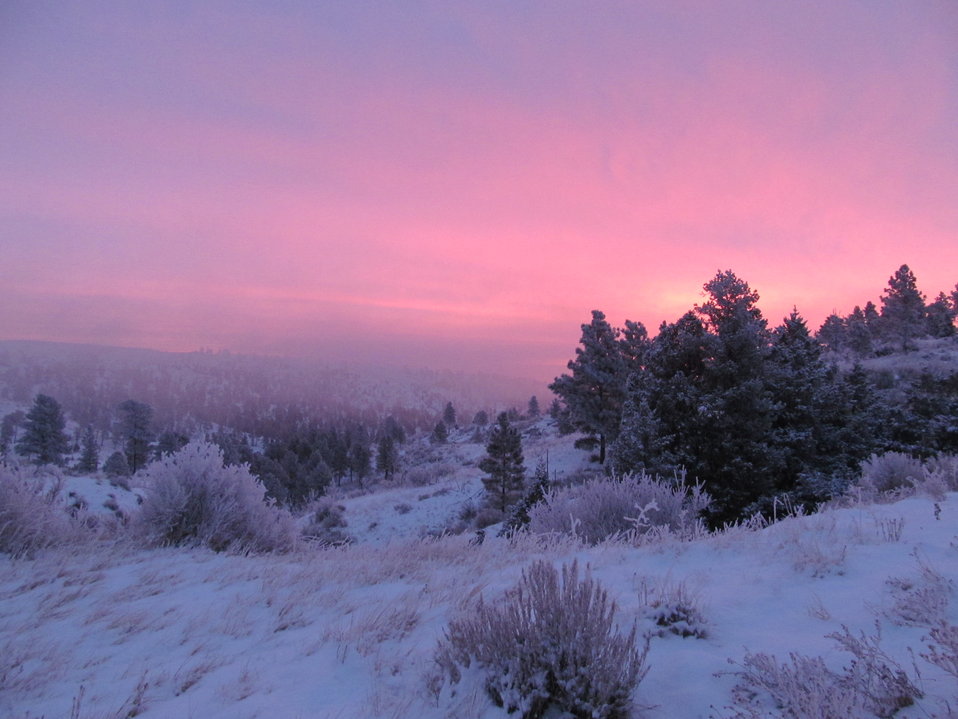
View from the Auto Tour

Sunrise in February on the Charles M. Russell NWR auto tour route.